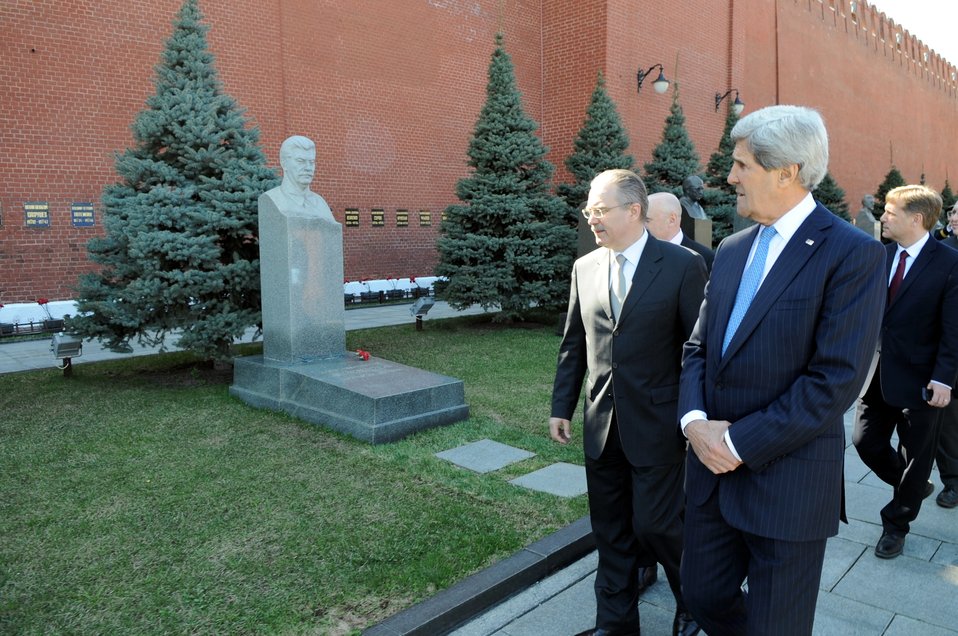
Secretary Kerry Tours Red Square

U.S. Secretary of State John Kerry and Russian Chief of Protocol Yuriy Filatov, with U.S. Ambassador to Russia Michael McFaul behind, walk past Joseph Stalin's tomb in Red Square in Moscow, Russia, on May 7, 2013.